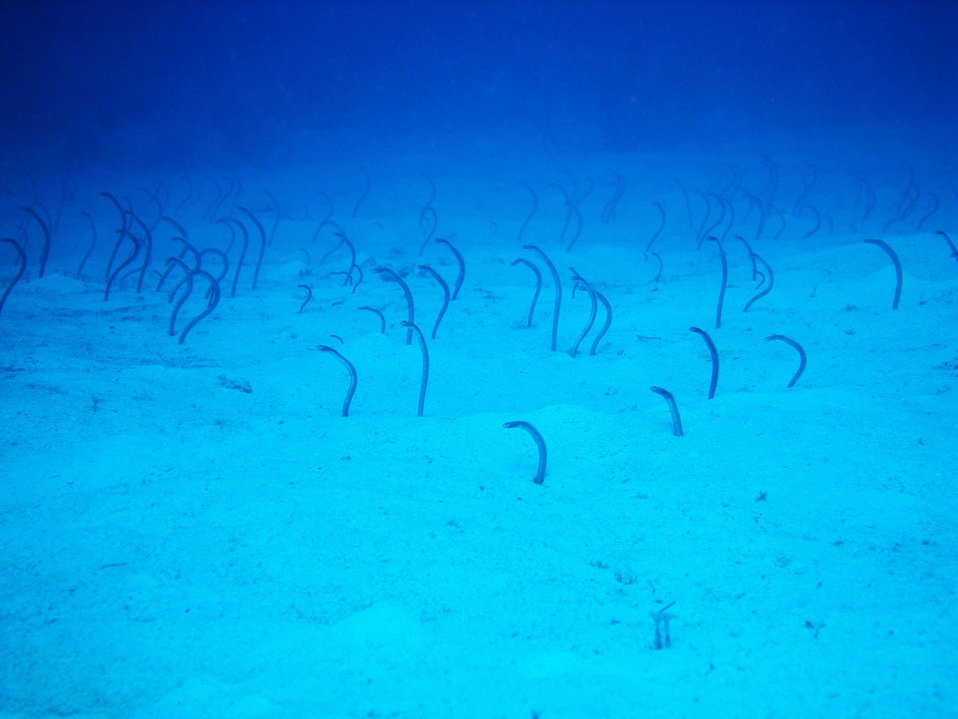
Brown garden eel (Heteroconger halis)